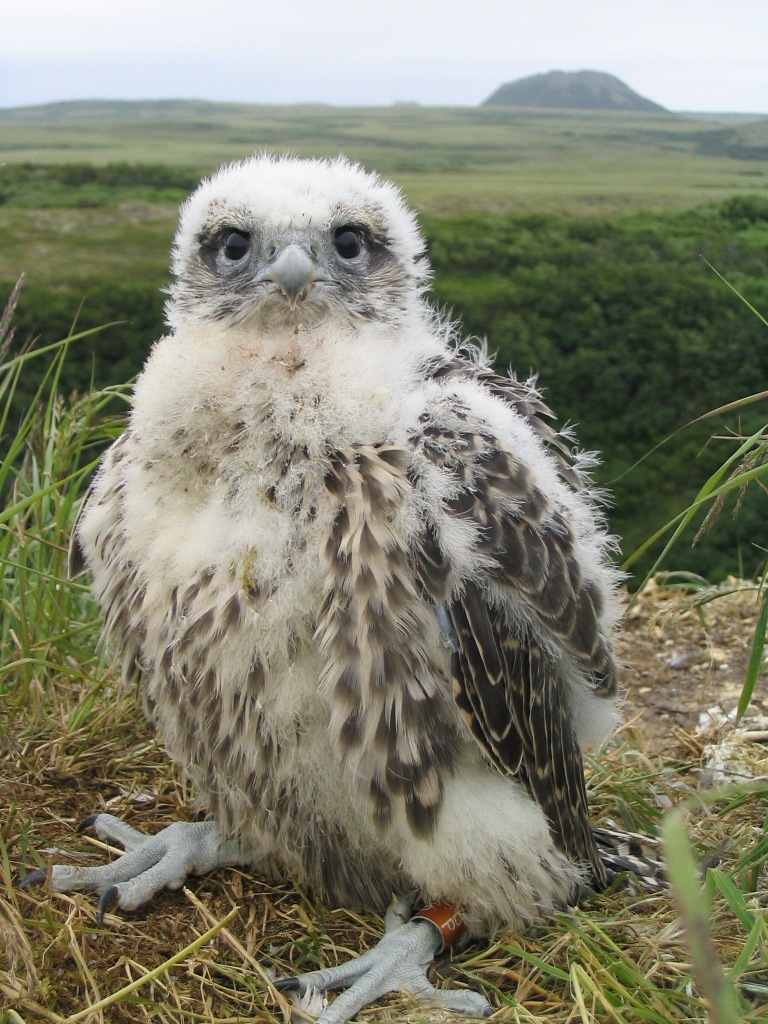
Gyrfalcon nestling

Yukon Delta National Wildlife Refuge/ USFWS